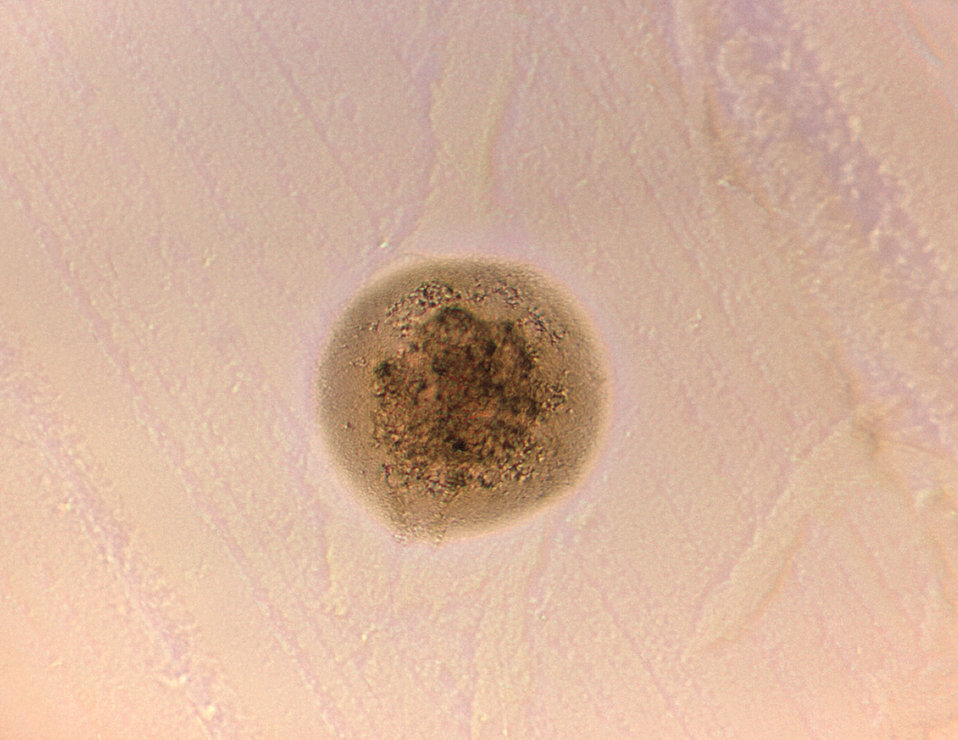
Magnified 125X, this image depicts the morphologic characteristics displayed by a single Gram-positive, Actinomyces bovis bacterial microcolony, of the strain, A-1109, which was cultivated, for a 48 - 72 hour time period, on an unknown culture medium.